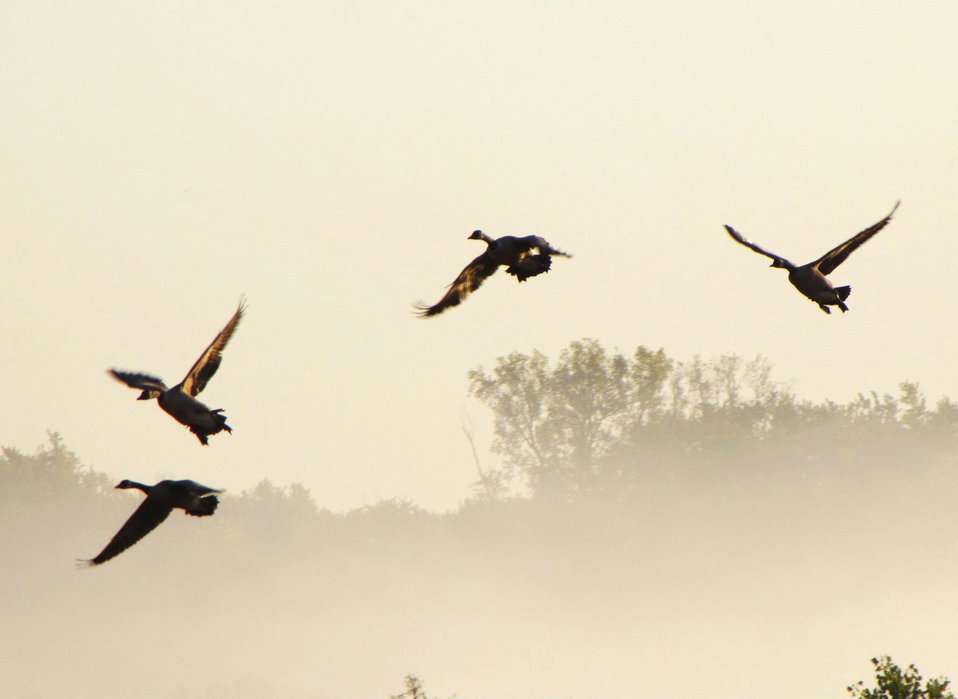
Canada geese staging at Port Louisa NWR

Port Louisa National Wildlife Refuge, IA
October 2011